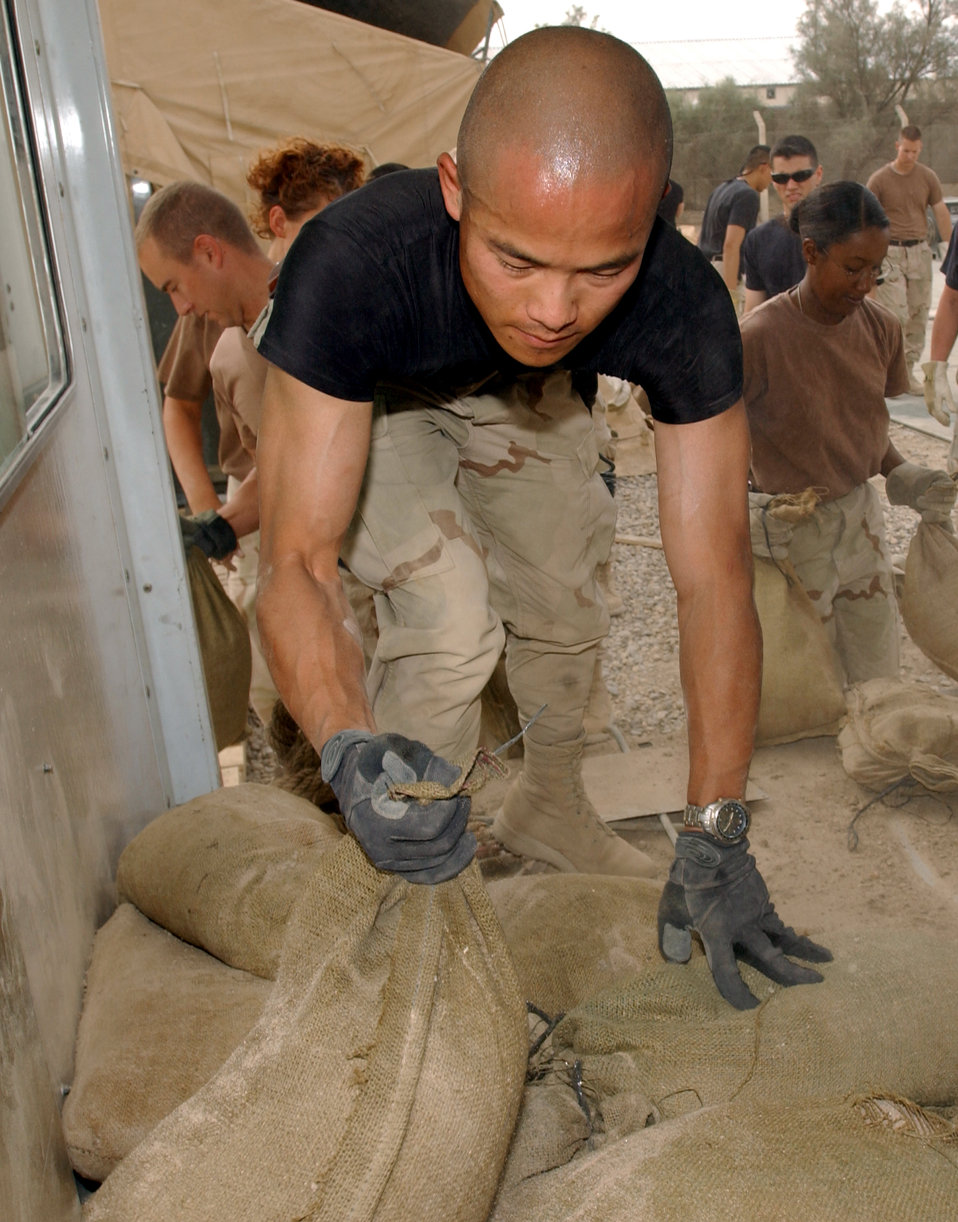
Sandbagging it

TALLIL AIR BASE, Iraq -- Staff Sgt. Barry English grabs sandbags to secure a tent here May 22. Sergeant English is a member of the 407th Expeditionary Communications Squadron.